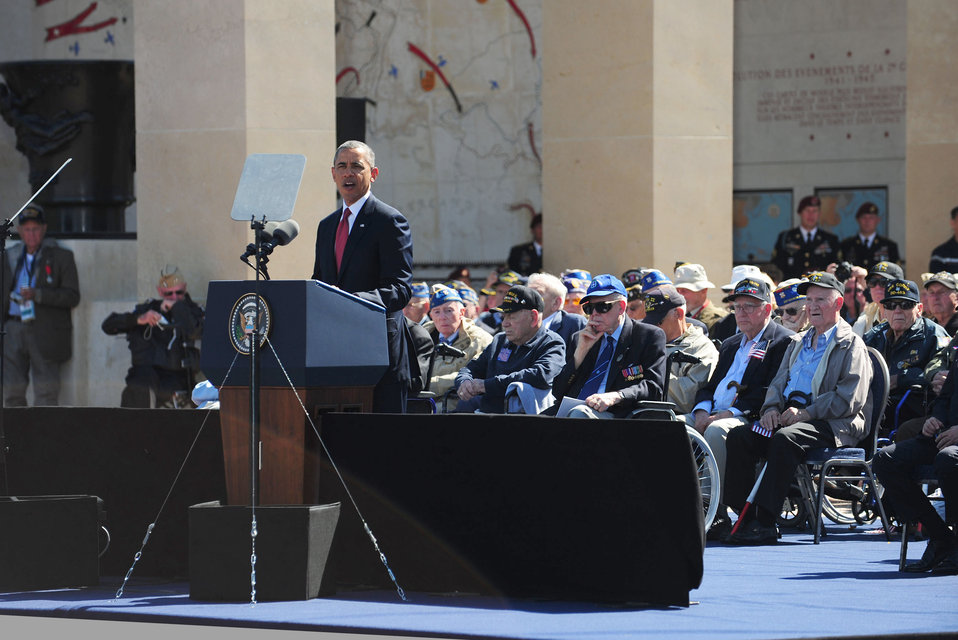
President Obama Speaks at 70th Anniversary of D-Day Ceremony

President Barack Obama honors World War II veterans at a ceremony as part of the 70th Anniversary of D-Day at the Normandy American Cemetery in Colleville-sur-Mer on June 6, 2014. The event was one of several commemorations of the 70th Anniversary of D-Day operations conducted by Allied forces during World War II June 5-6, 1944. Over 650 U.S. military personnel have joined troops from several NATO nations to participate in ceremonies to honor the events at the invitation of the French government.